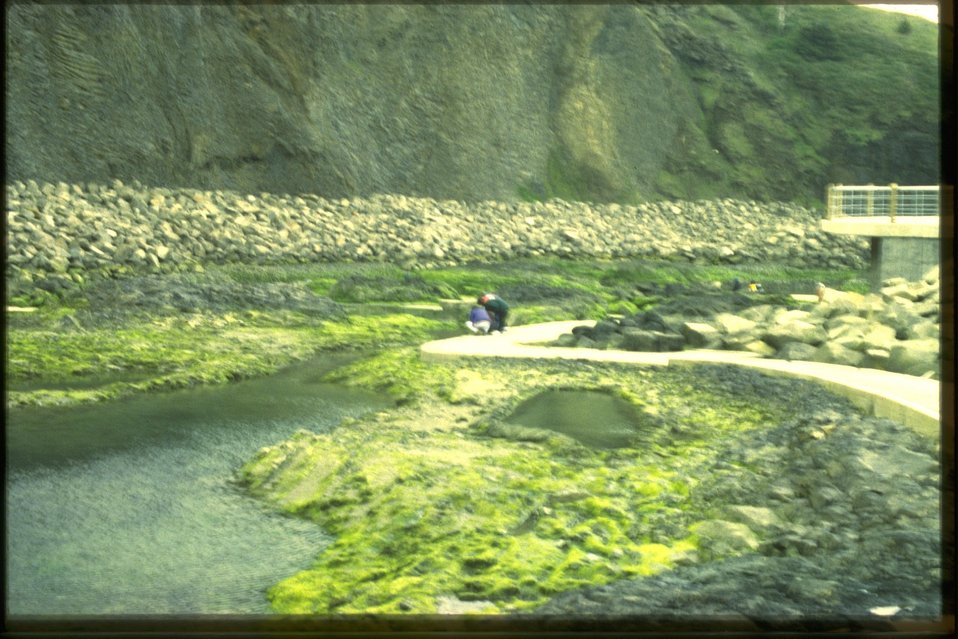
Low tide in Quarry Cove Tidepools near Yaquina Head.